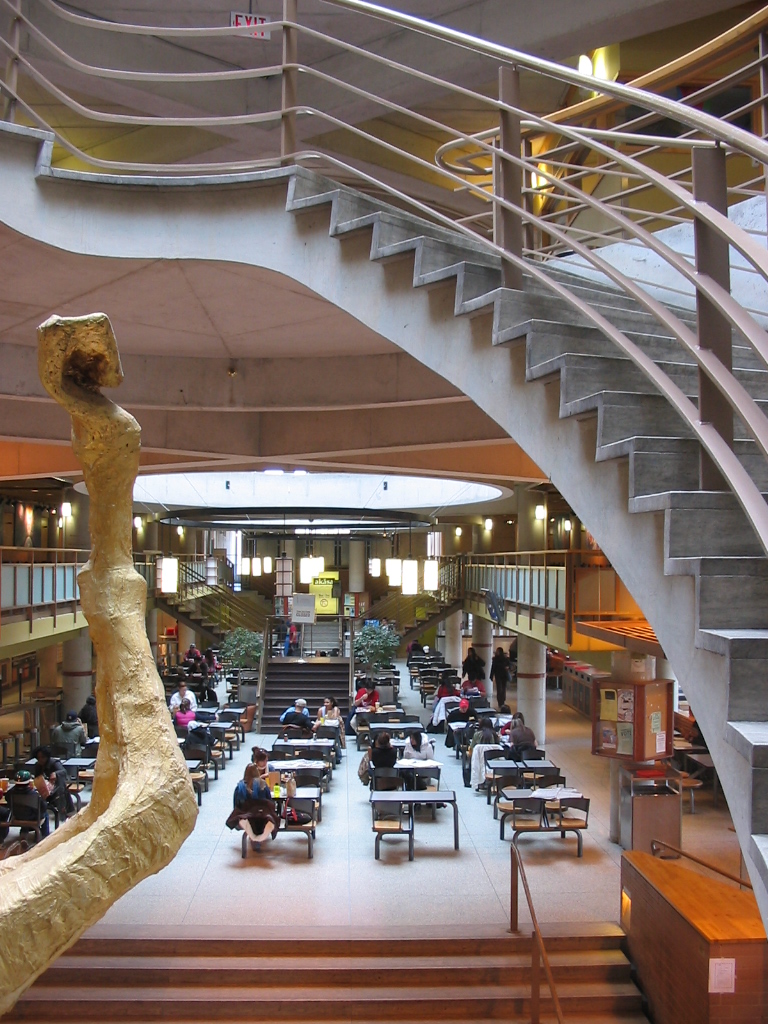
York University Student Centre